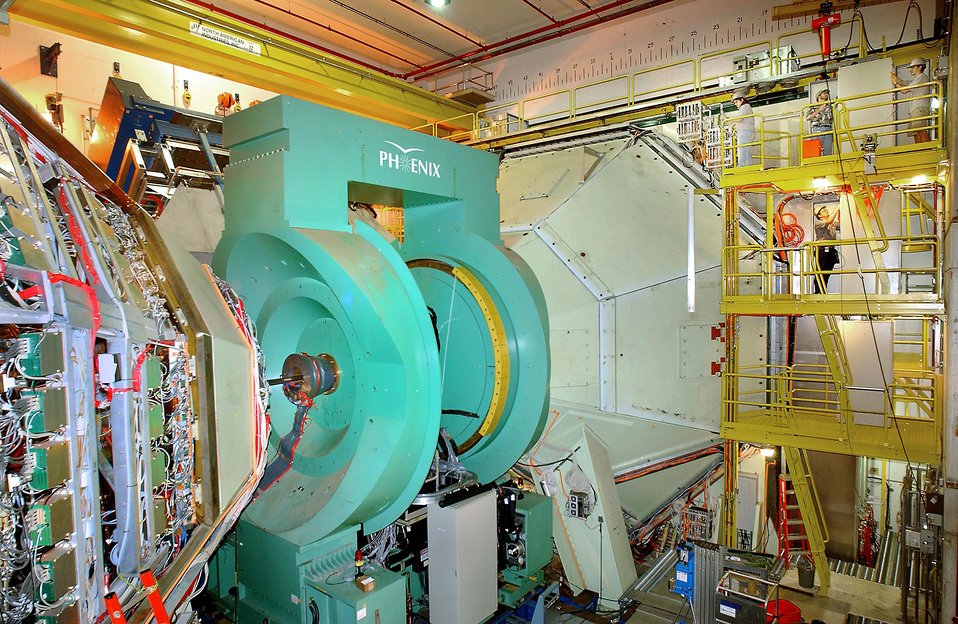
PHENIX IS ONE OF FOUR LARGE DETECTORS THAT HELPS PHYSICISTS ANALYZE THE PARTICLE COLLISIONS AT BROOKHAVEN NATIONAL LABORATORY'S RELATIVISTIC HEAVY ION COLLIER (RHIC).

THE PHENIX WILL LOOK FOR MANY DIFFERENT PARTICLES EMERGING FROM RHIC COLLISIONS, INCLUDING PHOTONS, ELECTRONS, MUONS AND QUARK-CONTAINING PARTICLES CALLED HADRONS. IT WILL USE LARGE STEEL MAGNETS THAT SURROUND THE AREA WHERE RHIC COLLISIONS TAKE PLACE. SCIENTISTS FROM AROUND THE WORLD WILL USED RHIC TO ANSWER SOME OF THE MOST BASIC QUESTIONS ABOUT THE PROPERTIES OF MATTER AND THE EVOLUTION OF OUR UNIVERSE.